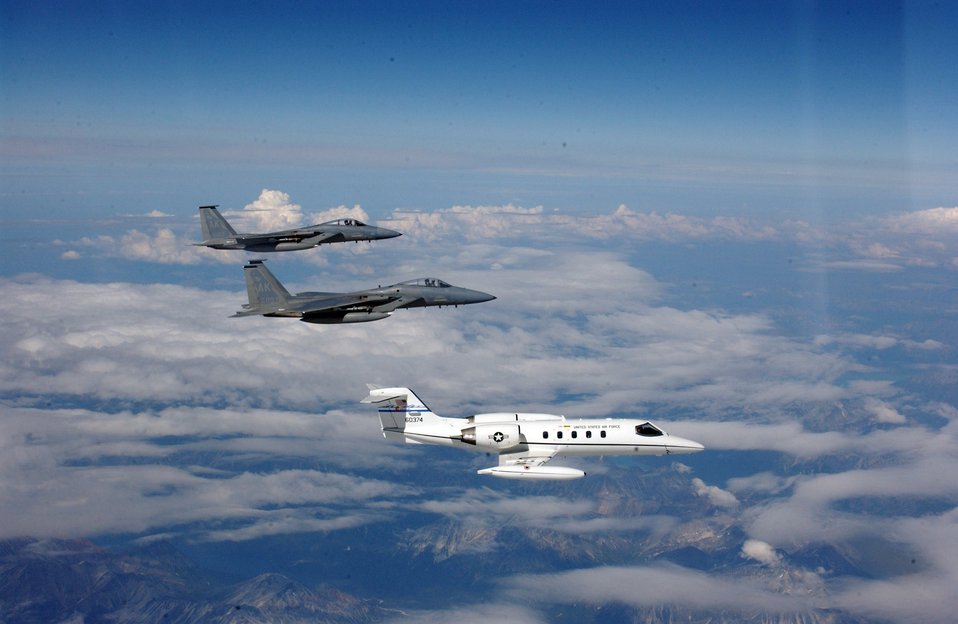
Air surveillance

OVER ALASKA -- Two F-15 Eagles from Elmendorf Air Force Base, Alaska, intercept a C-21 on Aug. 15 during Alaska Shield/Northern Edge 05. The exercise is the largest homeland defense/homeland security exercise conducted in Alaska. It is an opportunity within the state to exercise an integrated local, state and federal government response to a series of simulated emergencies.